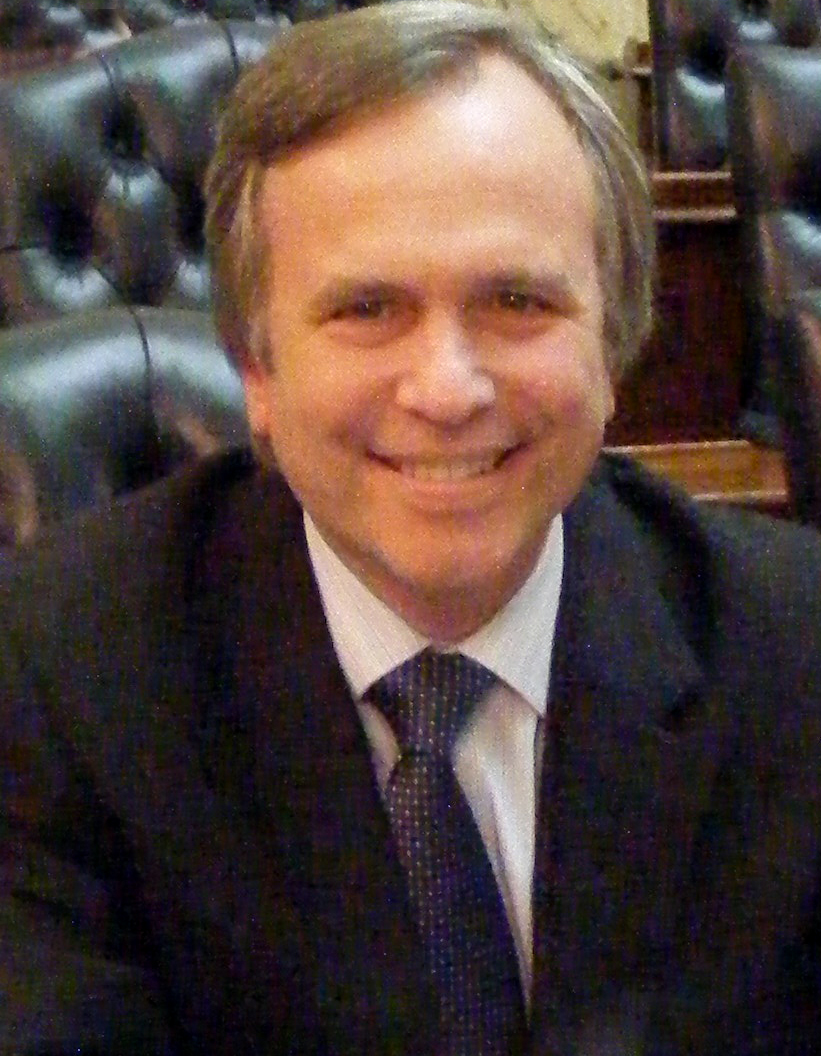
Dana M. Stein (born 1958) is an American politician from Maryland and a member of the Democratic Party. He is currently serving in his first full term in the Maryland House of Delegates, representing District 11 in Baltimore County.